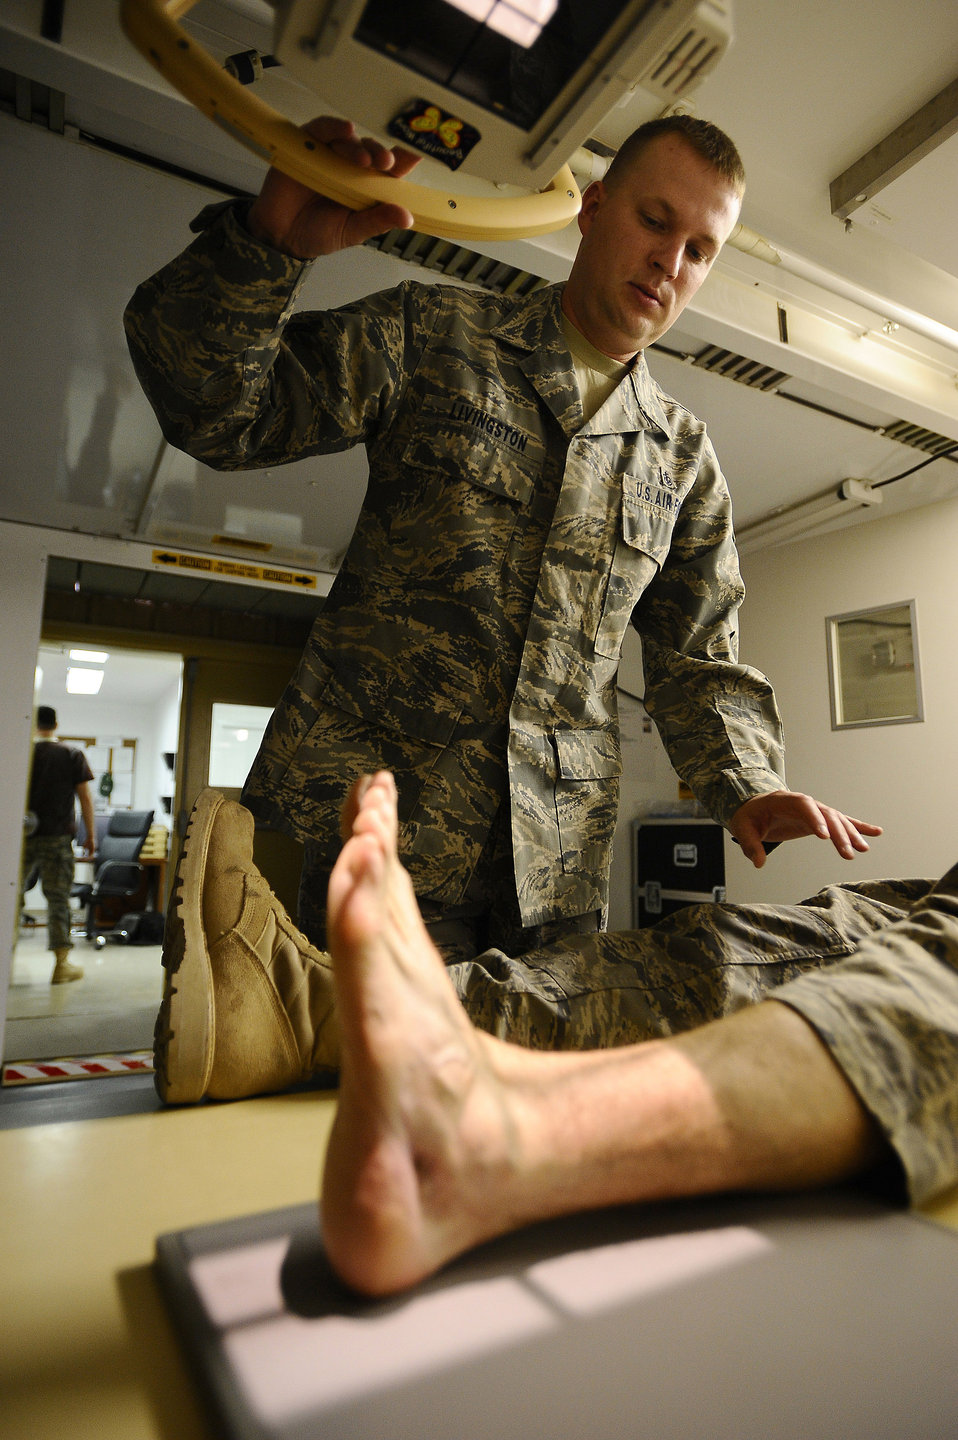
I can see right through you

Staff Sgt. Joshua Livingston positions a patient's ankle before taking an X-ray image Nov. 21 at Joint Base Balad, Iraq. The X-ray will aid doctors in diagnosing medical conditions that the patient may have. Sergeant Livingston is assigned to the 332nd Expeditionary Medical Support Squadron and deployed from Keesler Air Force Base, Miss. His hometown is Rapid City, S.D.